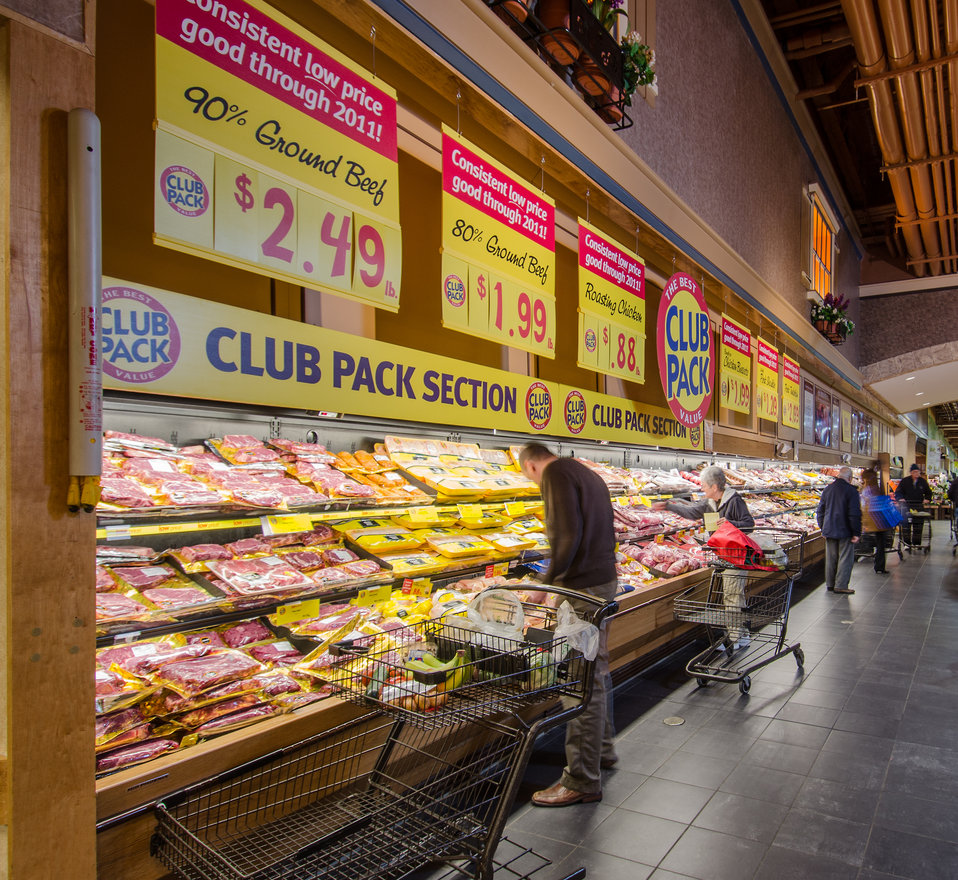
Shoppers at the meat poultry department of a grocery store in Fairfax, Virginia, on March 3, 2011.